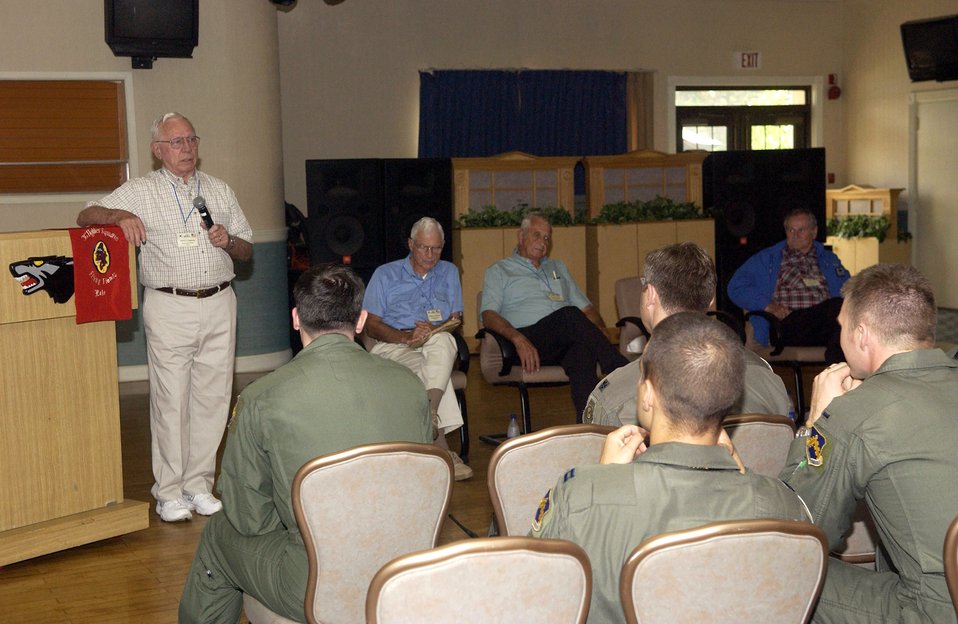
American pilots of yesteryear visit Kunsan, rekindle Korean War memories

Retired Col. Wilbur Carpenter speaks to 8th Fighter Wing Airmen Sept. 11 about his flying experiences during the Korean War as Lt. Gen. Charles Cleveland, Col. Kenneth Shealy and Col. Ralph Gibson await their opportunity to speak. The four veterans were visiting Kunsan and sharing their experiences with the Airmen there.